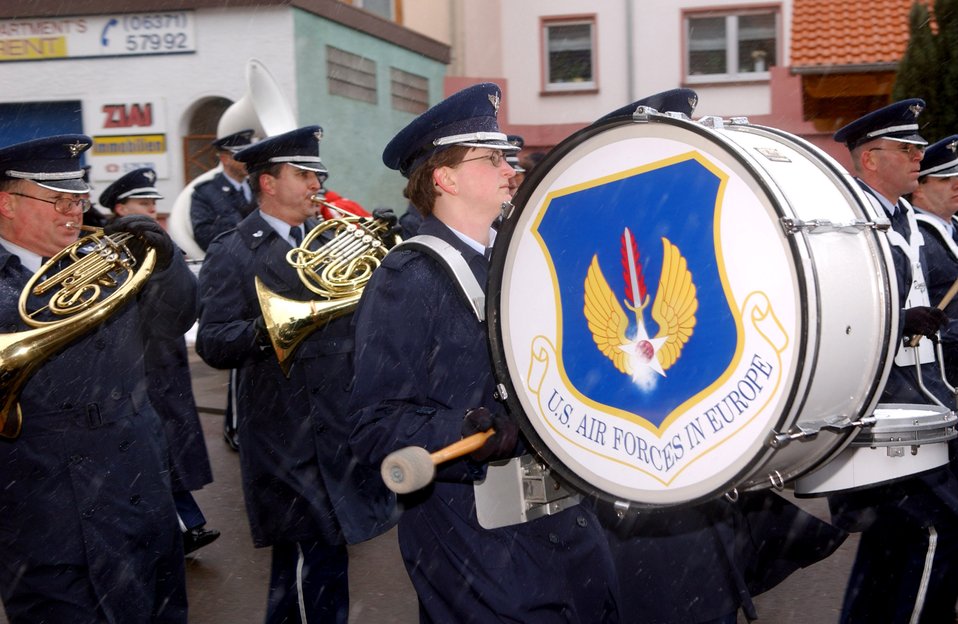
U.S. Air Forces in Europe Band members participate in the local Fasching Parade, Ramstein Village, Germany, on Tuesday, Feb. 28, 2006. The parade was initially named and reserved for the Tuesday before Ash Wednesday.